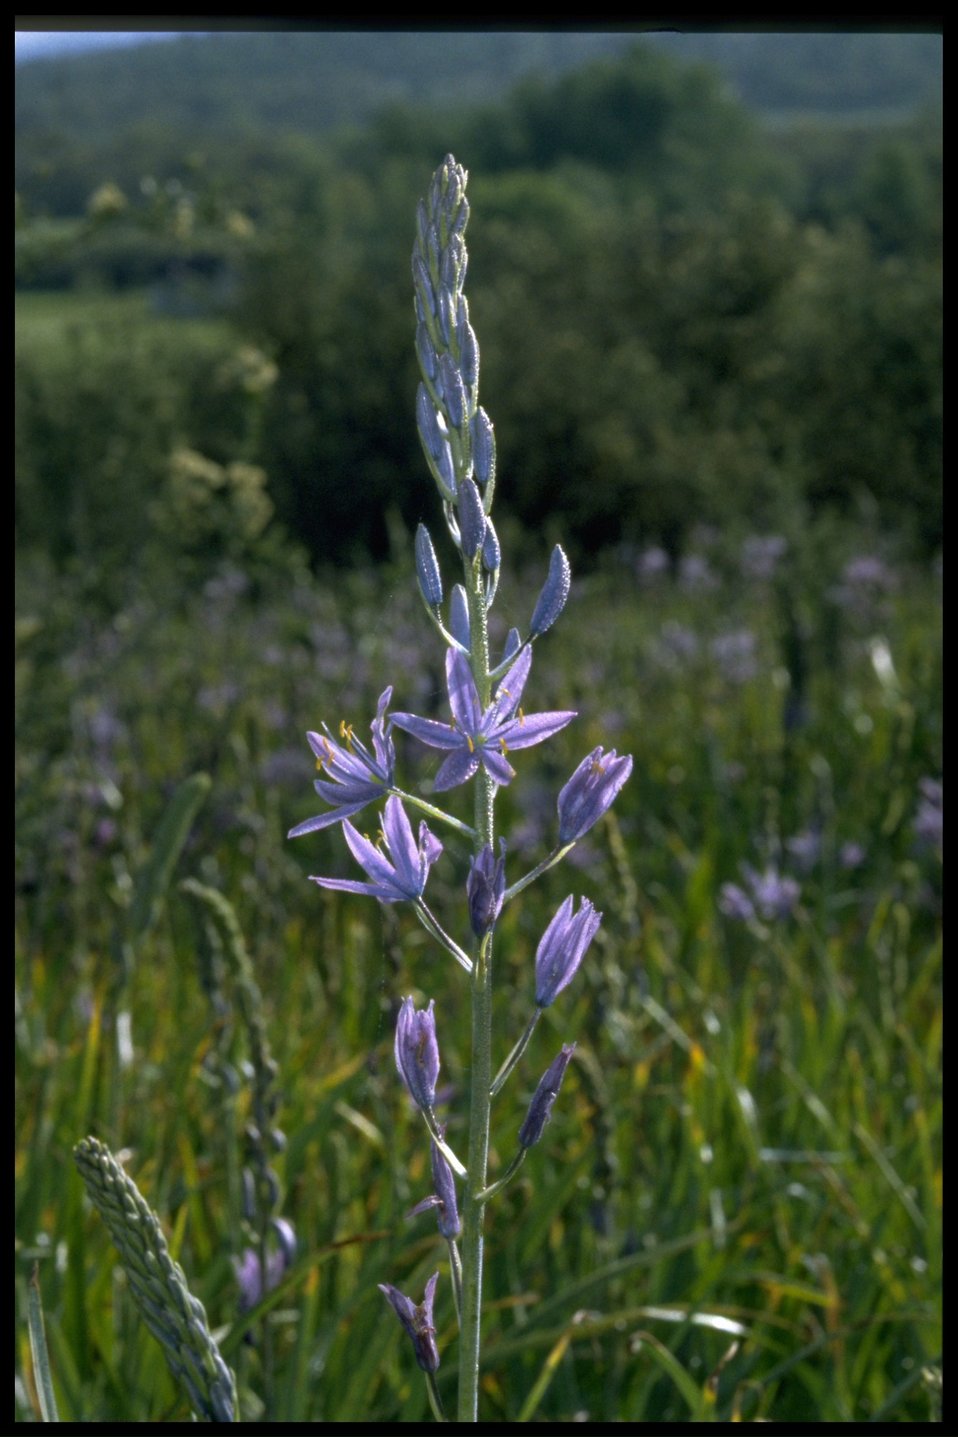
Medium shot of Camassia quamash.